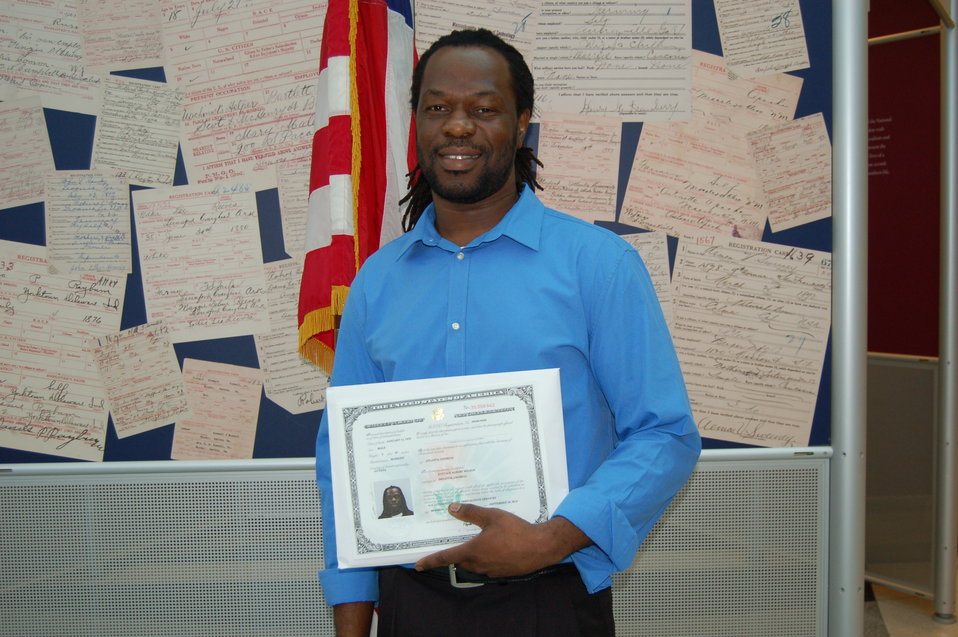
New Citizens